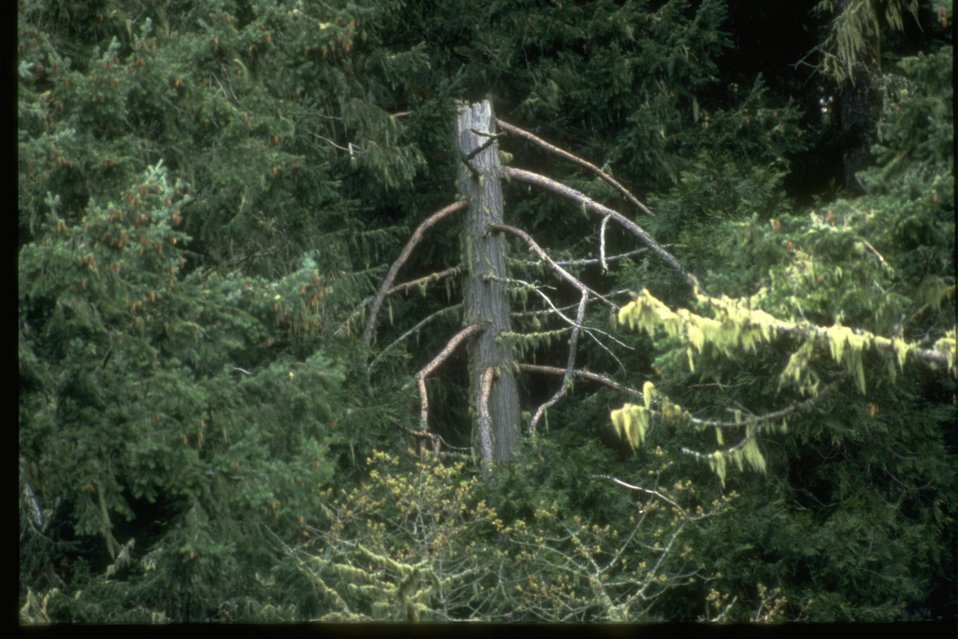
Wildlife "snag" Tree